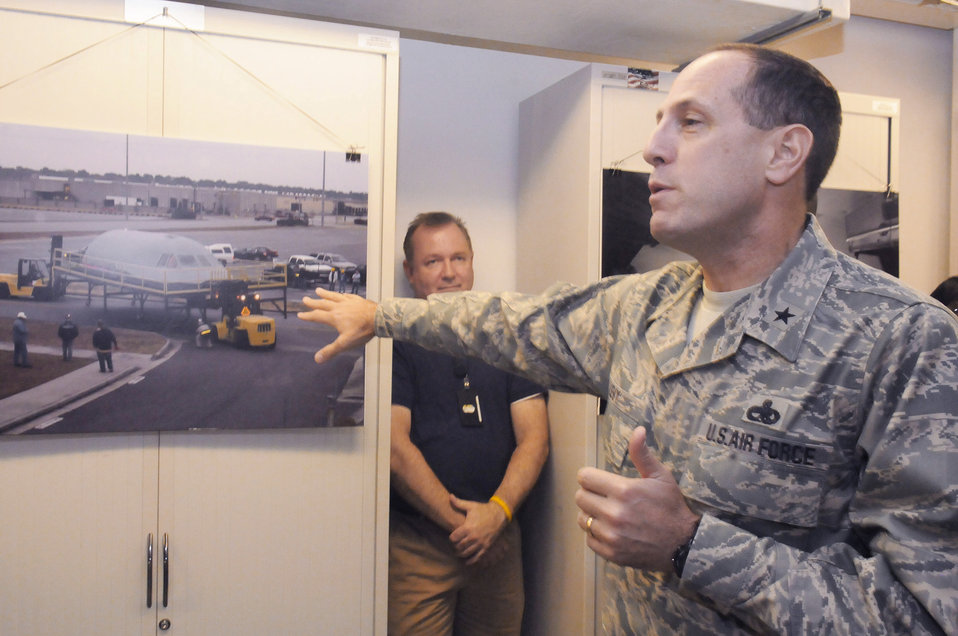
C-5 Galaxy cockpit

Brig. Gen. Lee Levy, the 402nd Maintenance Wing commander at Robins Air Force Base, Ga., explains the logistics of moving a C-5 cockpit section into its new facility during the opening ceremony for the building Sept. 10, 2010. The cockpit section will be used by engineers to test software in a real environment without tying up actual C-5s. The cockpit section came from a C-5 that crashed at Dover AFB, Del., in 2006.